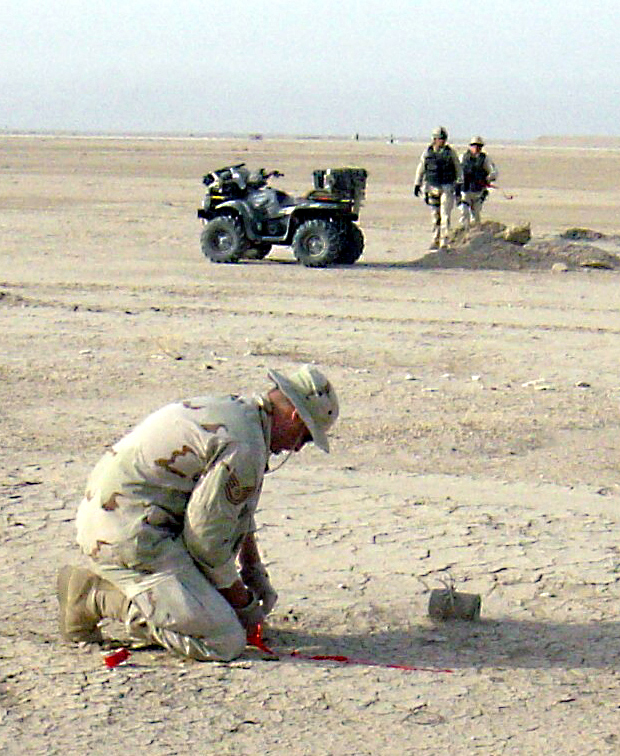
X marks the spot

OPERATION IRAQI FREEDOM -- An Airborne Red Horse explosive ordnance technician marks an unexploded submunition at a seized airfield in Iraq. He is a member of one of three new Airborne Red Horse teams that can be inserted into remote and inaccessible airfields by parachute or assault helicopter.